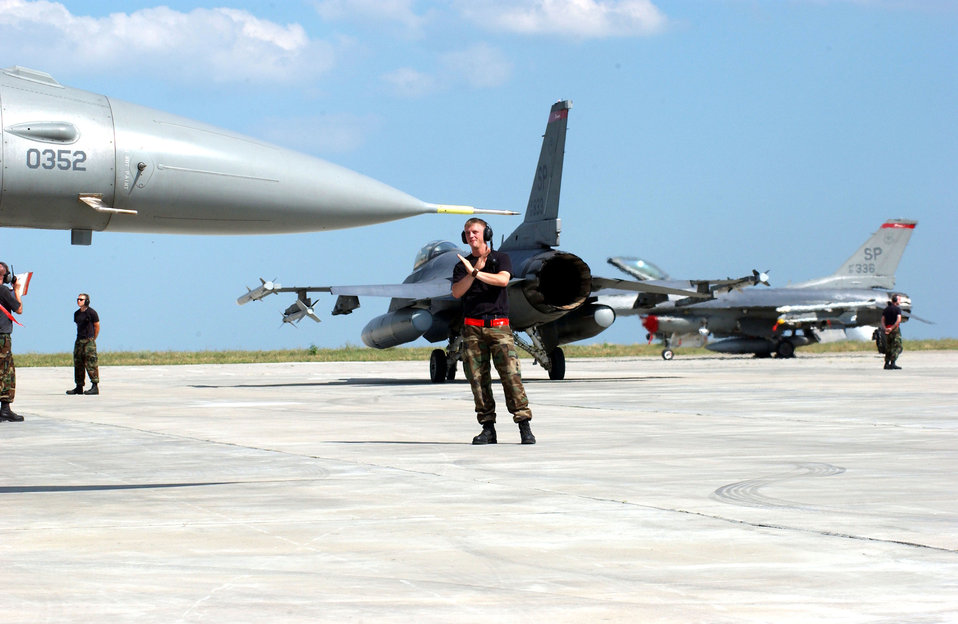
Viper Lance 2006

Senior Airman Steven Weidman marshals an F-16 Fighting Falcon before its first mission against the Romanian Air Force's MiG 21 Lancers at Exercise Viper Lance 2006 at Mihail Kogalniceanu Air Base, Romania, on Aug. 9. This is the first time F-16 crews have trained in Romania. Airman Weidman is a crew chief with the 22nd Expeditionary Fighter Squadron. The F-16 is from Spangdahlem Air Base, Germany.